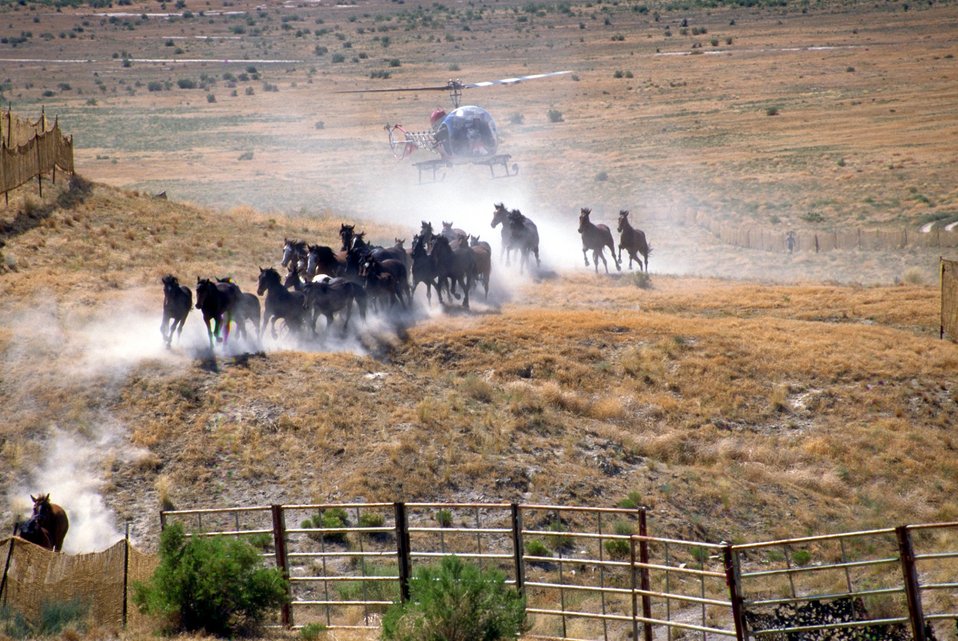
Wild Horse gather, Cedar Mountains.